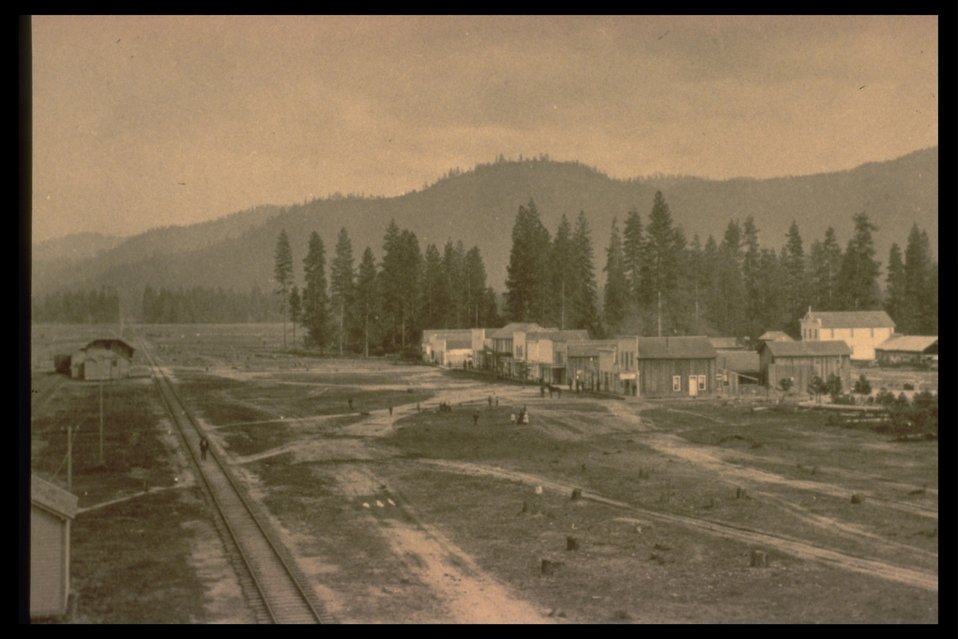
Black and White phot of a railway town in forest country.